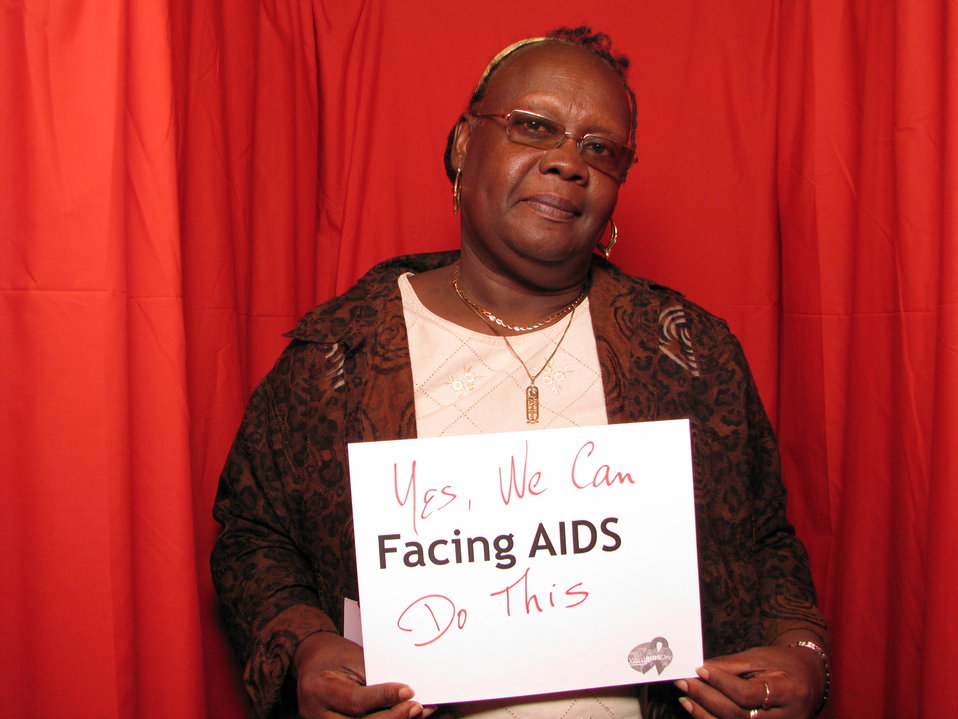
Yes, We Can, FACING AIDS. Do this.

From the AIDS.gov photo booth at the U.S. Conference on AIDS, September 2010 (Orlando, FL).